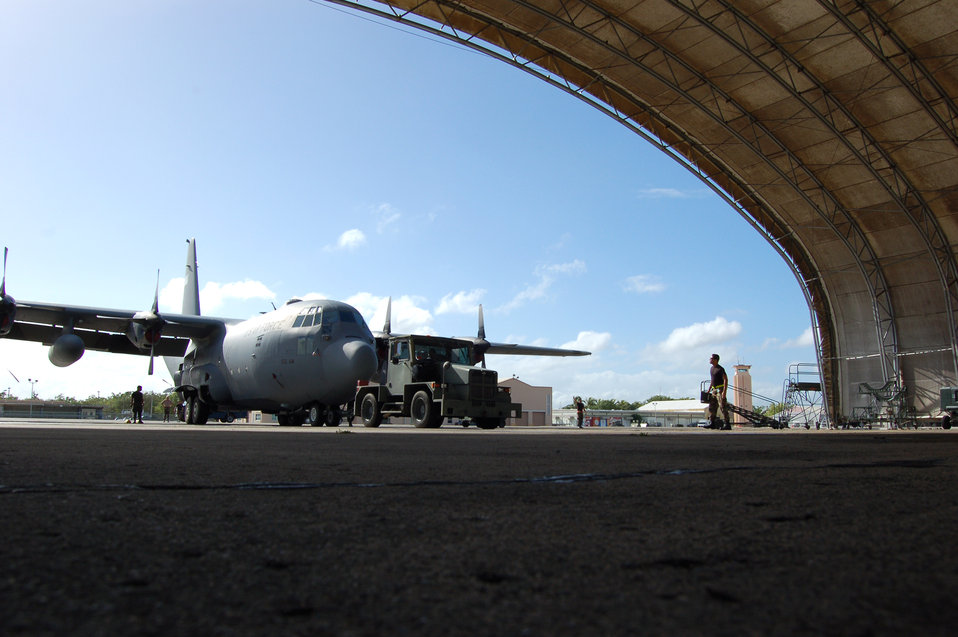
Airmen respond to Peru earthquake

Puerto Rico Air National Guard C-130 Hercules aircraft, like this one at Muniz Air National Guard Base, Puerto Rico, airlifted a mobile surgical team from Soto Cano Air Base, Honduras, to Peru Aug. 17.